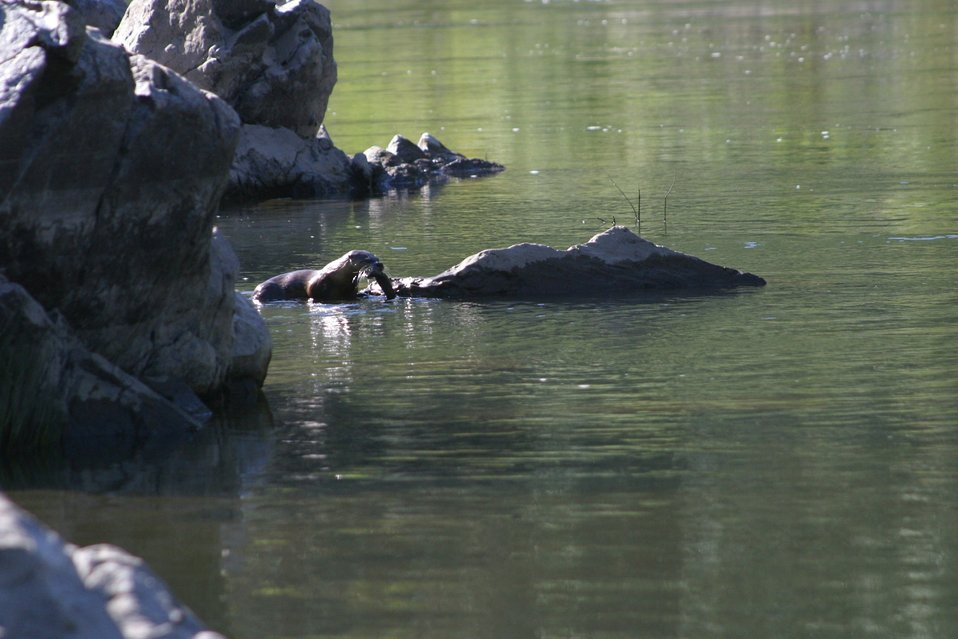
Wild section of the Rogue River from Grave Creek to Foster Bar May 19 to May 22.